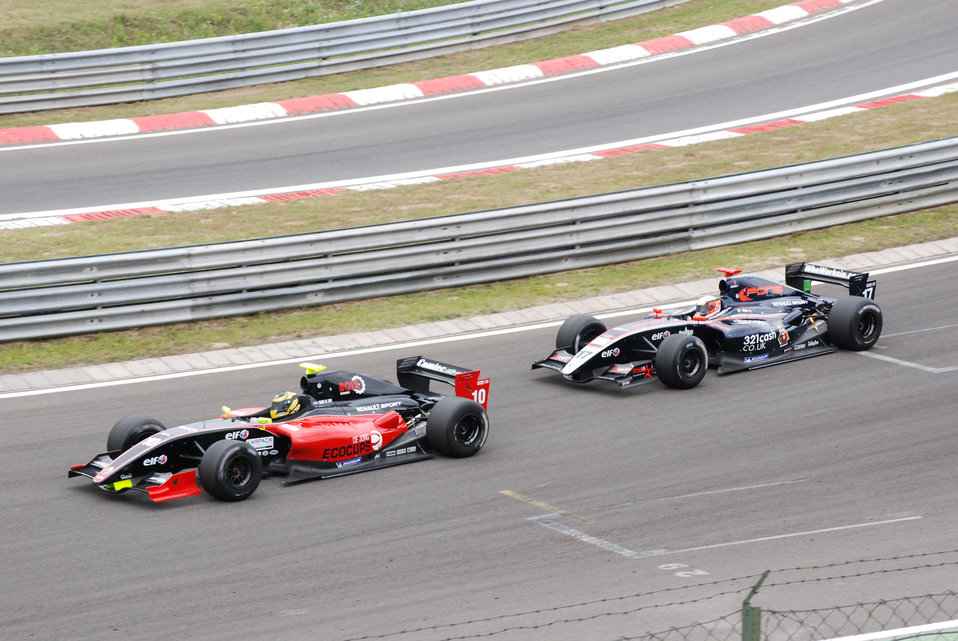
Formula sports cars at hungaroring

World series formula sports car at hungaroring race track.